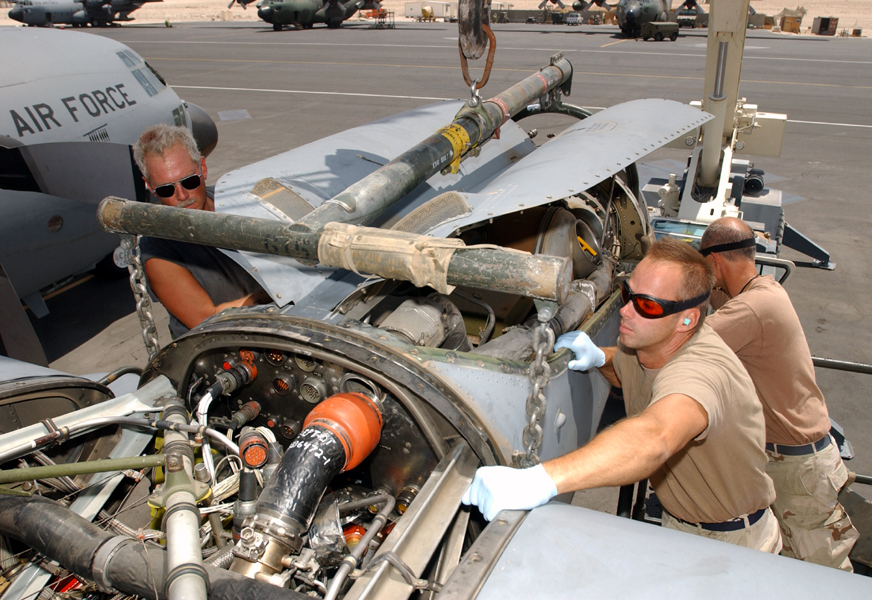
Engine check

OPERATION IRAQI FREEDOM -- (Left to right) Tech. Sgts. Leo Batliner and Clark Taylor and Staff Sgt. Brett Trammell prepare to remove the engine for inspection during routine maintenance on a C-130 Hercules. The airmen are from the Missouri Air National Guard's 139th Airlift Wing supporting Operation Iraqi Freedom from a forward-deployed location in Southwest Asia.